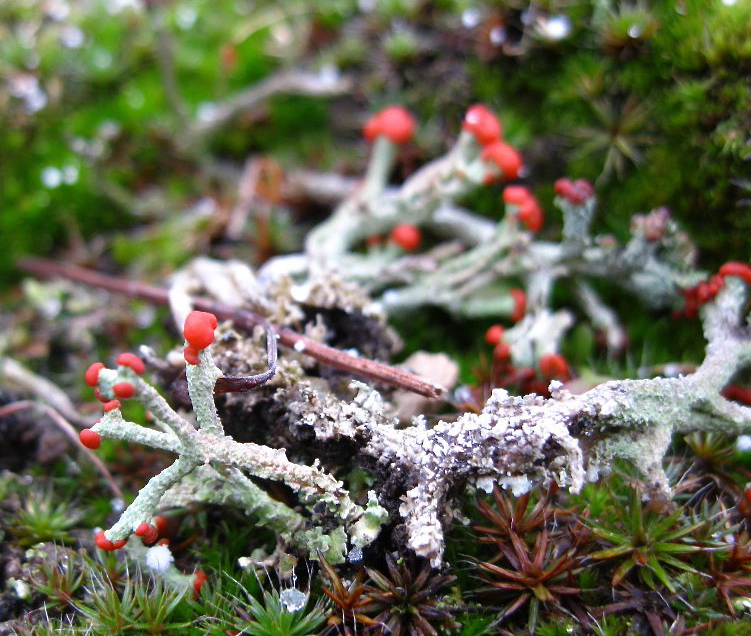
British soldier lichen

Cladonia cristatella
Necedah National Wildlife Refuge, WI
March 2012